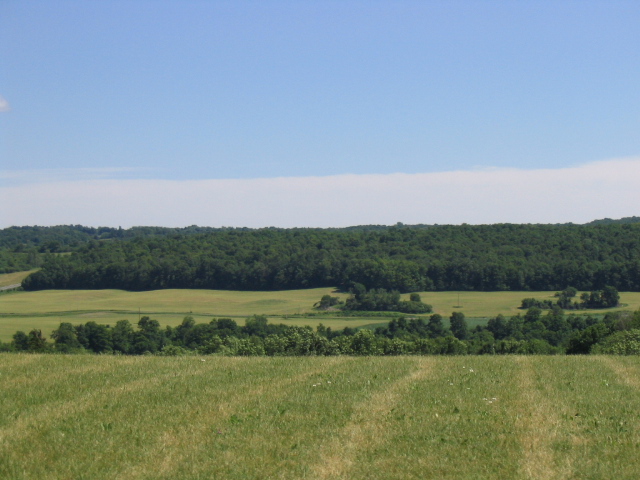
photo of the Rolling Hills of Camillus, NY, taken by me on June 30, 2007
Category:Images of New York